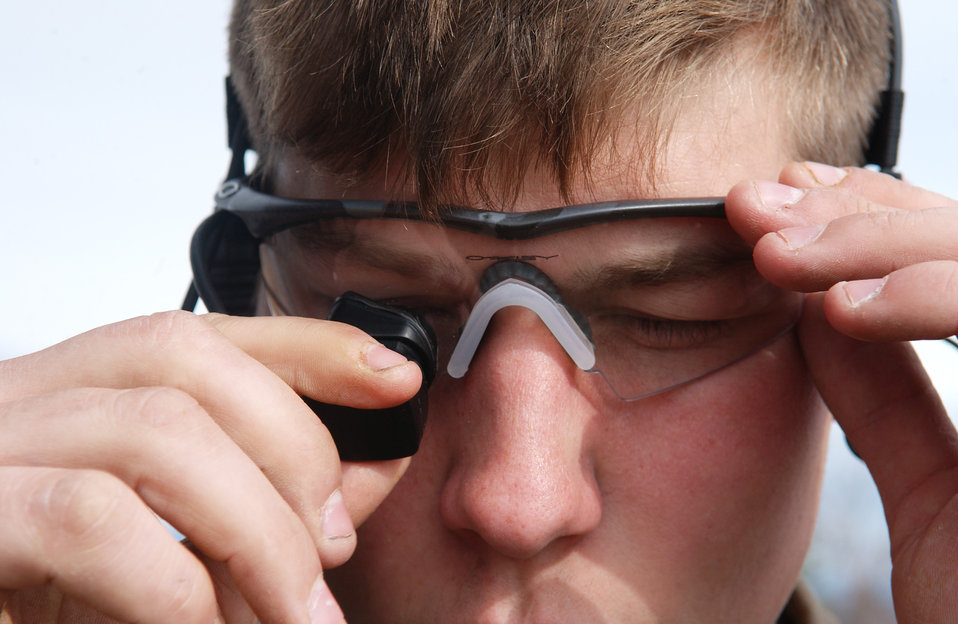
New experimental equipment enhances Airmen capabilities

Senior Airman Nicholas Halladay tests out a new head-mounted display screen attached to a computer during Exercise Northern Edge May 5 at Eielson Air Force Base, Alaska. Tactical air control party Airmen are helping test new experimental equipment in the field. Airman Halladay is a TACP assigned to Det. 1, 3rd Air Support Operation Squadron from Fort Richardson, Alaska.